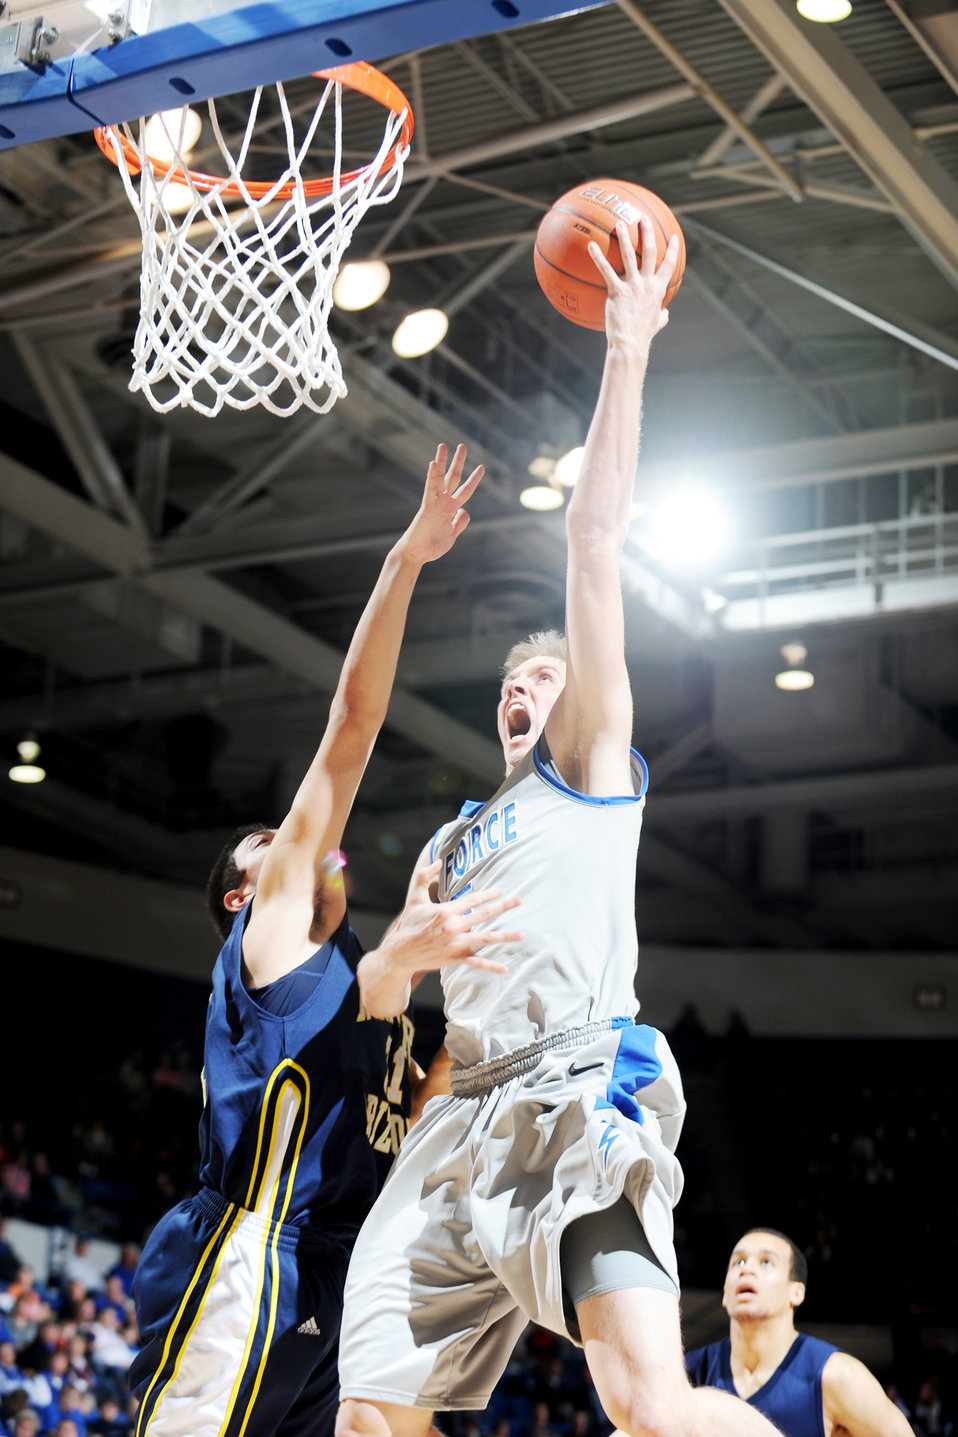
Falcons vs Northern Arizona

Air Force Academy sophomore guard Taylor Stewart goes up for a basket during the Falcons' game against Northern Arizona at the Academy's Clune Arena Dec. 19, 2009. Air Force lost the game 60-52.